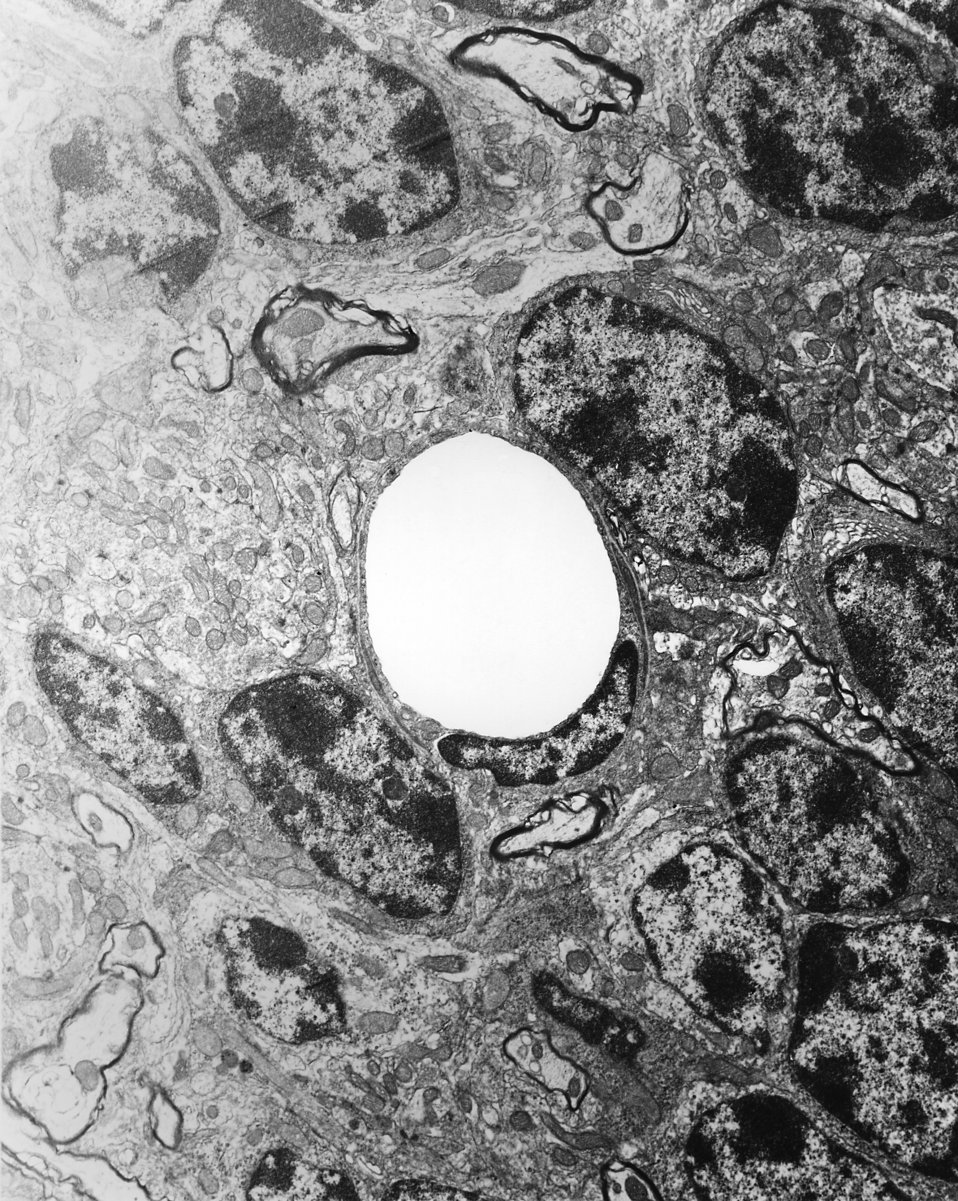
This 1978 transmission electron micrograph (TEM) depicted a cross-sectional view of a normal, uninfected mouse brain capillary that has been perfusion-fixed at normal blood pressure.